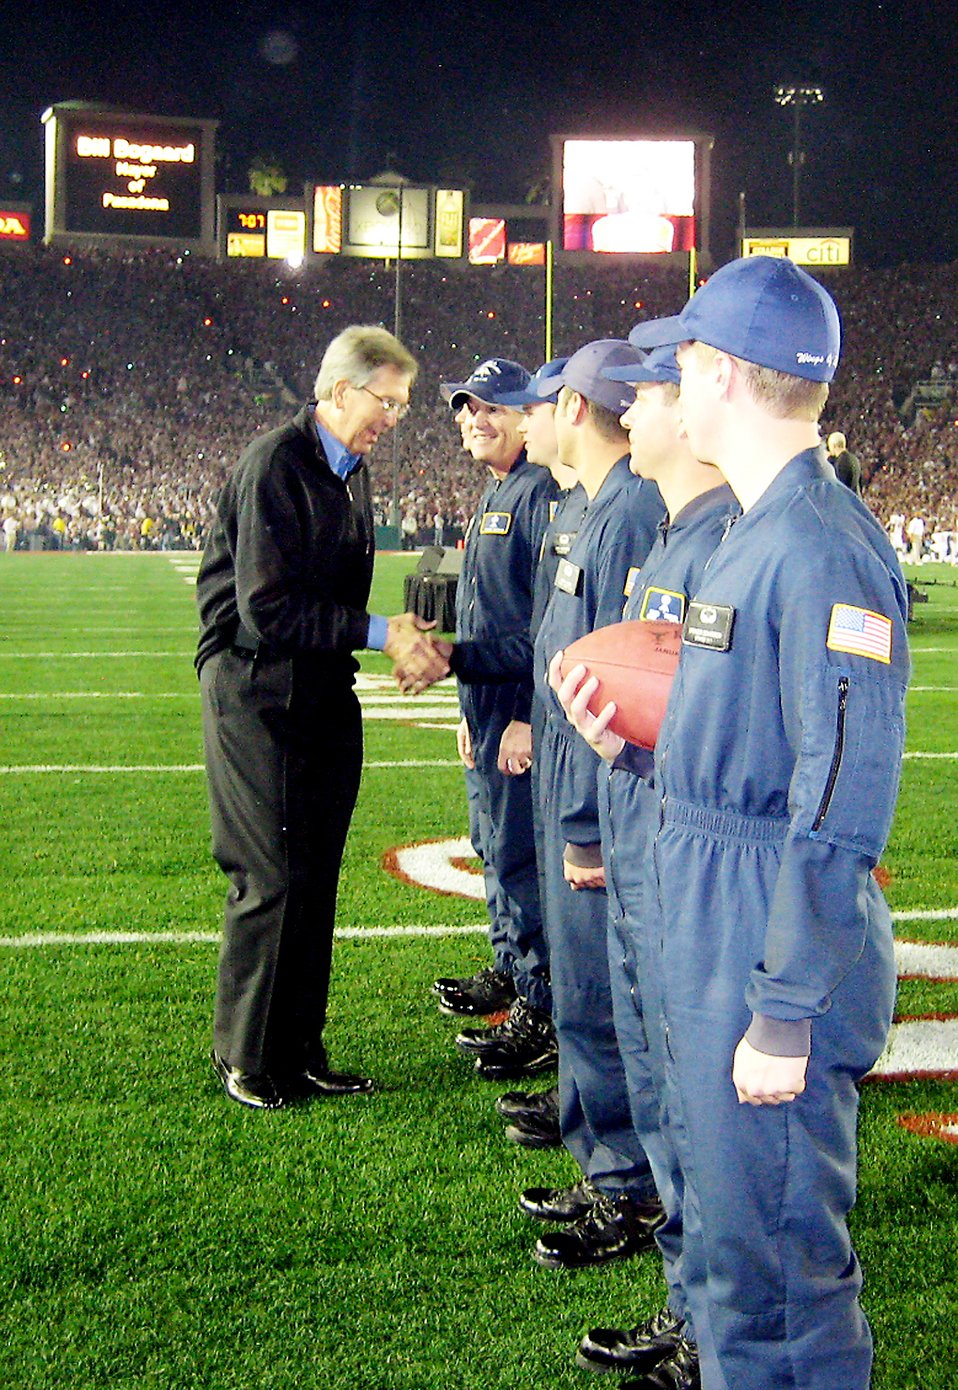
Wings of Blue jumps into Rose Bowl

Pasadena, Calif., Mayor Bil Bogaard meets U.S. Air Force Academy Cadets 1st Class Spencer Walker, Joseph Valdez, David Leibrand and Spencer Schardein after they jumped into the Rose Bowl for the Citi Bowl Championship Series Championship Game Jan. 7, 2010 in Pasadena. The cadets are part of Wings of Blue, the Air Force's official parachute demonstration team.